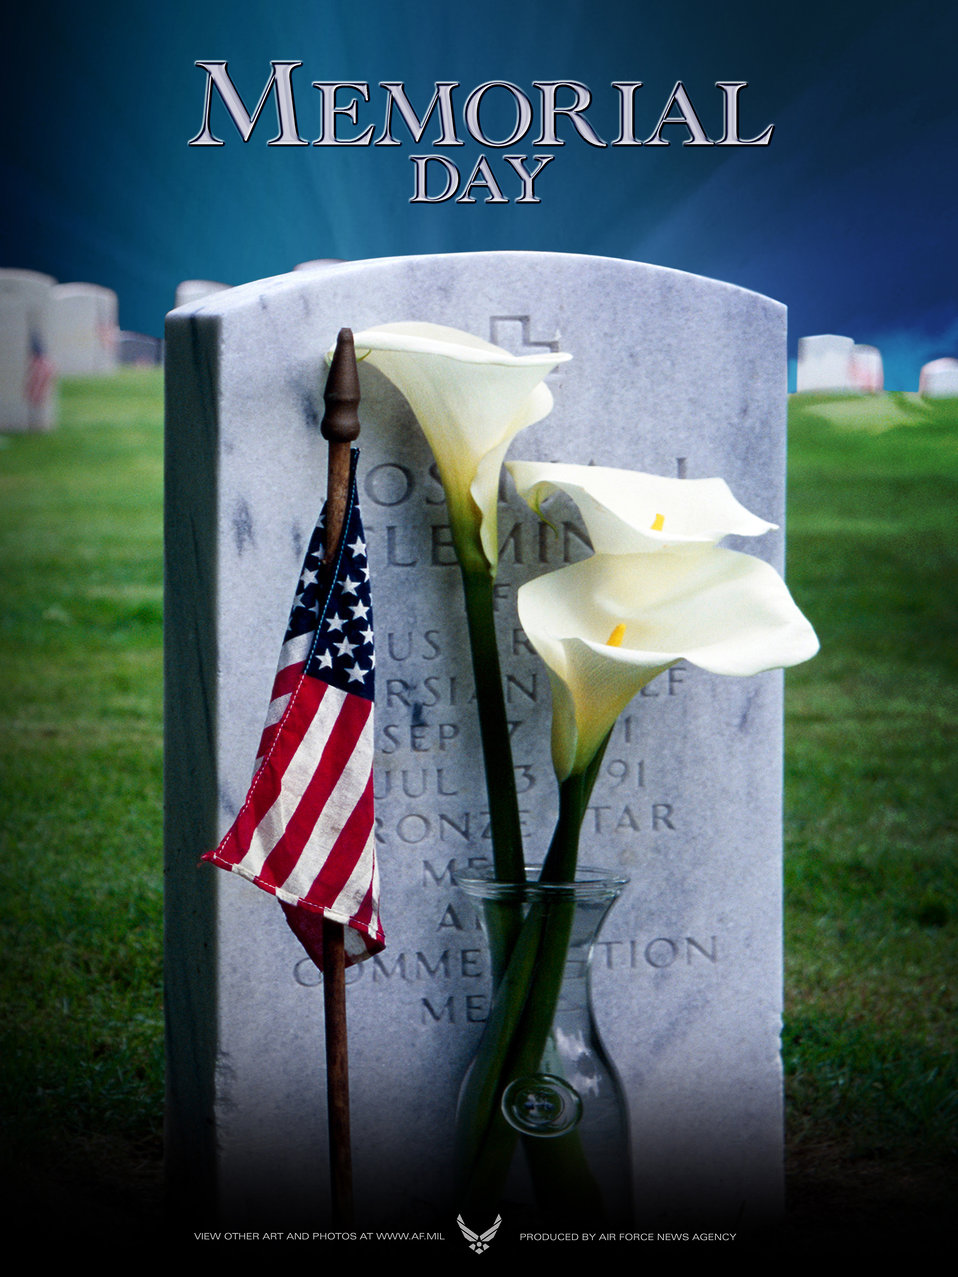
2008 Memorial Day Poster #2

2008 Memorial Day Poster.